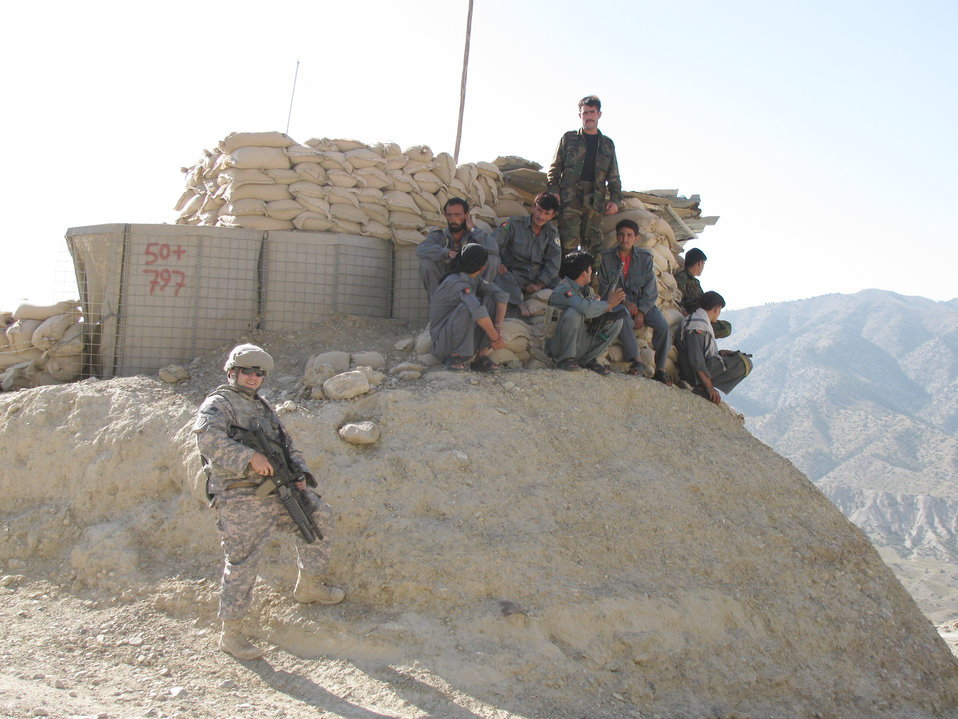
Staff Sgt. Alexander Yessayan is shown on a foot patrol in Paktya, Afghanistan. Sergeant Yessayan is assigned to the 53rd Combat Communications Squadron.